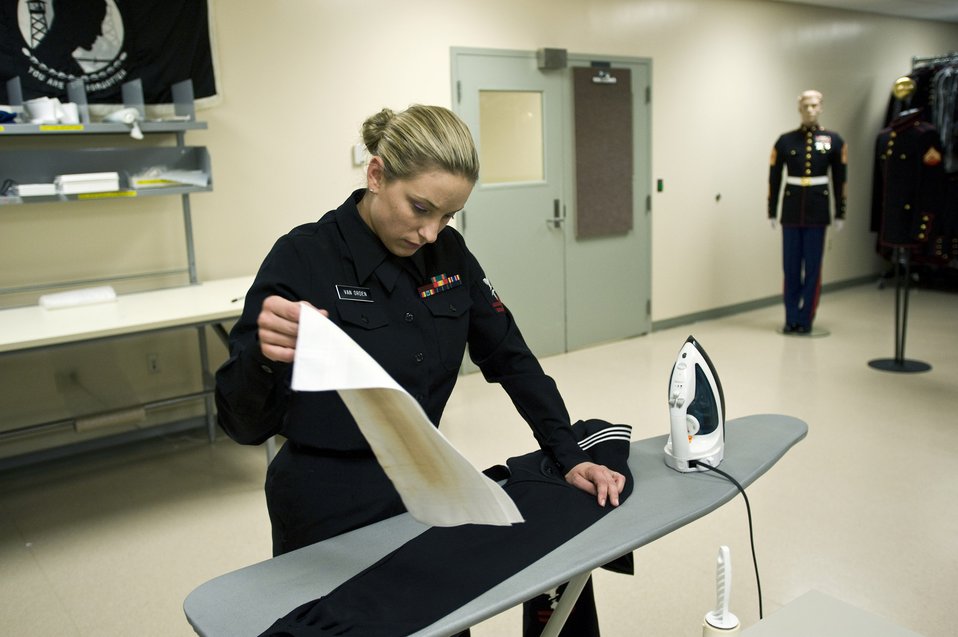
Dignified Transfer of Remains

Petty Officer 2nd Class Danielle Van Orden irons a U.S. Navy uniform March 31 for a fallen sailor. Petty Officer Van Orden is the Navy and Marine Corps liaison for the uniform section of the Air Force Mortuary Affairs Operations Center at Dover Air Force Base, Del. Service liaisons prepare uniforms for fallen heroes and work with military escorts for the dignified-transfer-of-remains process.